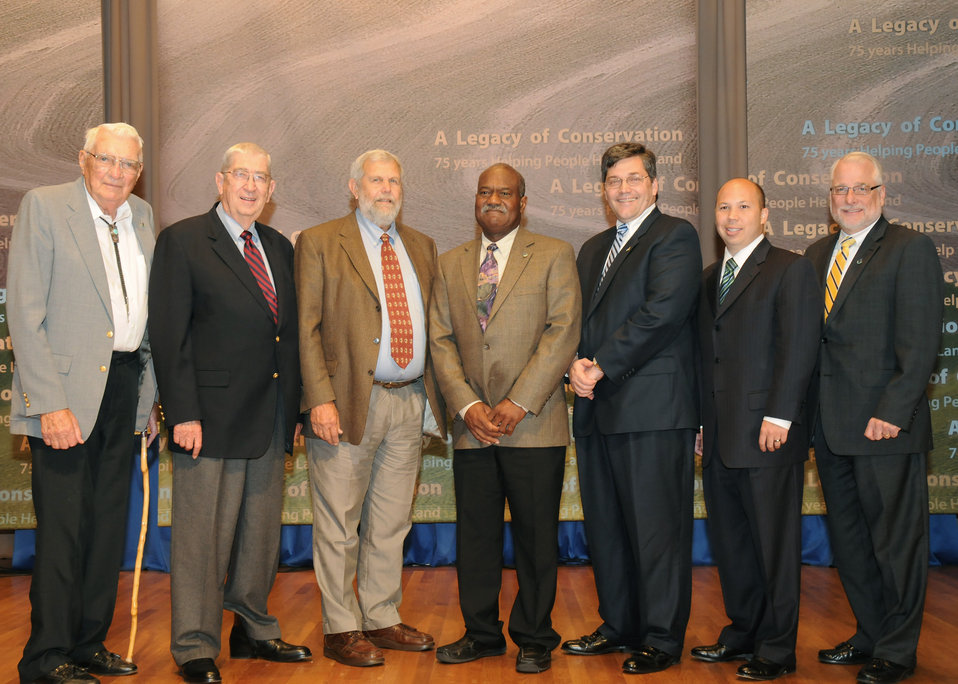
Natural Resource Conservation Service (NRCS) former and current Chief's attend the 75th Anniversary of NRCS celebrating a “Legacy of Conservation” at the Jefferson Auditorium, U. S. Department of Agriculture in Washington, D. C., on Tuesday, April 27, 2010. Left to right, R. M. (Mel) Davis, June 1975 - June 1979, William R. Richards, Dec. 1990 - Jan. 1993, Paul Johnson, Jan. 1994 - Nov. 1997, Pearlie S. Reed, March 1998 - May 2002, Bruce Knight, May 2002 - Aug. 2006, Arlen Lancaster, Aug. 2006 - Jan. 2009, and Dave White current Chief, Jan. 2009- present . USDA photo 10di1330-03